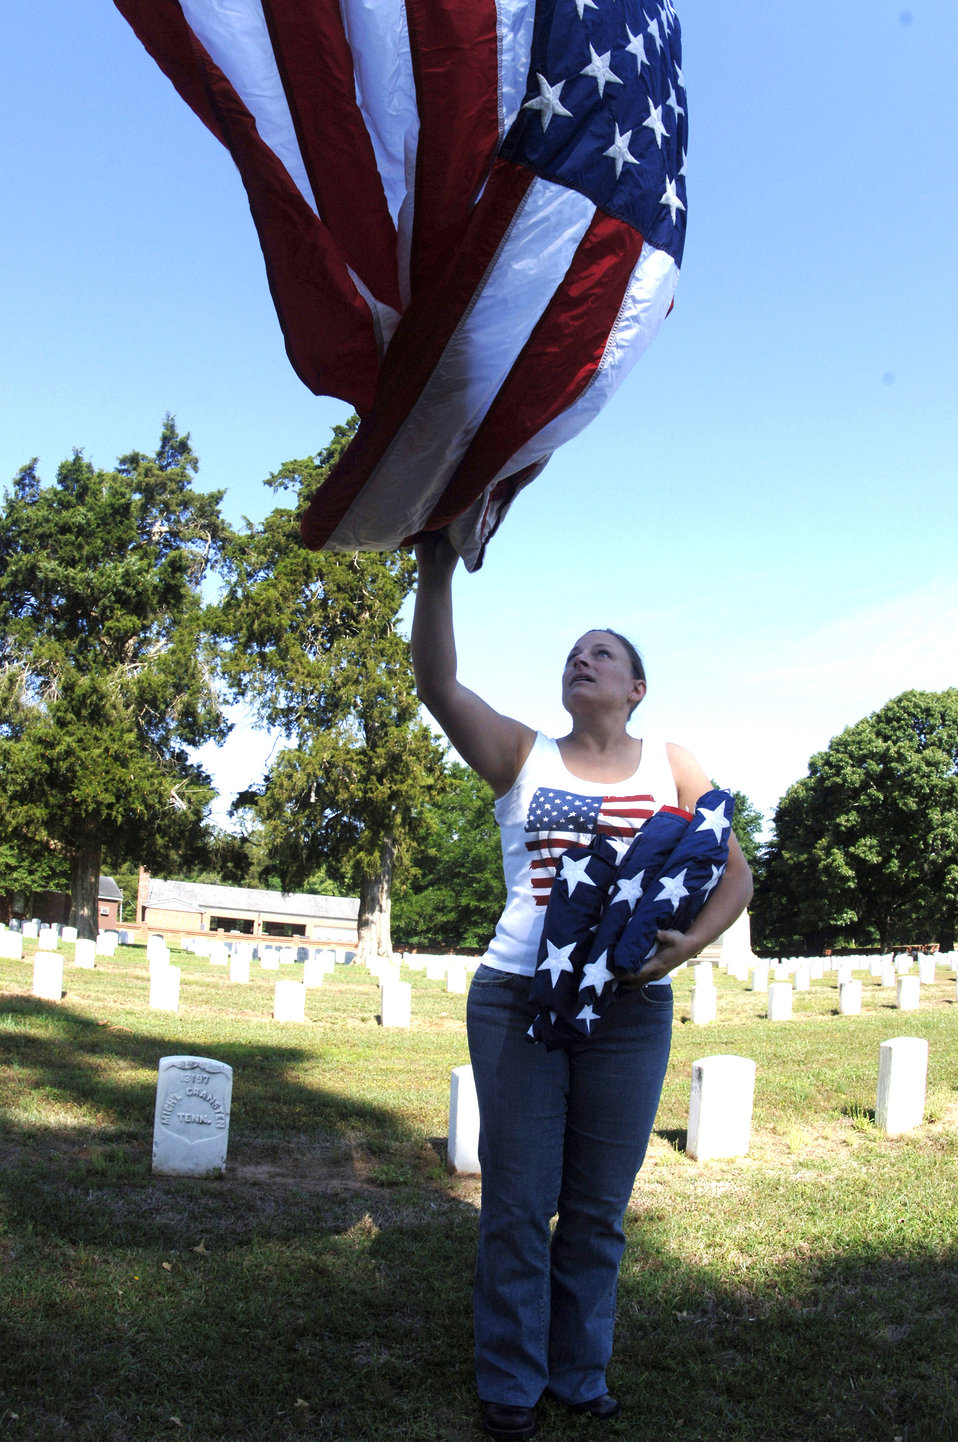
Memorial Day preparations at Andersonville Cemetery

First Lt. Tiffany Changet unfurls a U.S. flag at Andersonville National Cemetery near Americus, Ga., on Friday, May 19, 2006. She was one of 70 motorcycle enthusiasts from Robins Air Force Base, Ga., who volunteered to set up U.S. flags for Memorial Day. The group rode as a convoy on the 50-mile trip. Lieutenant Changet is with the 116th Air Control Wing.